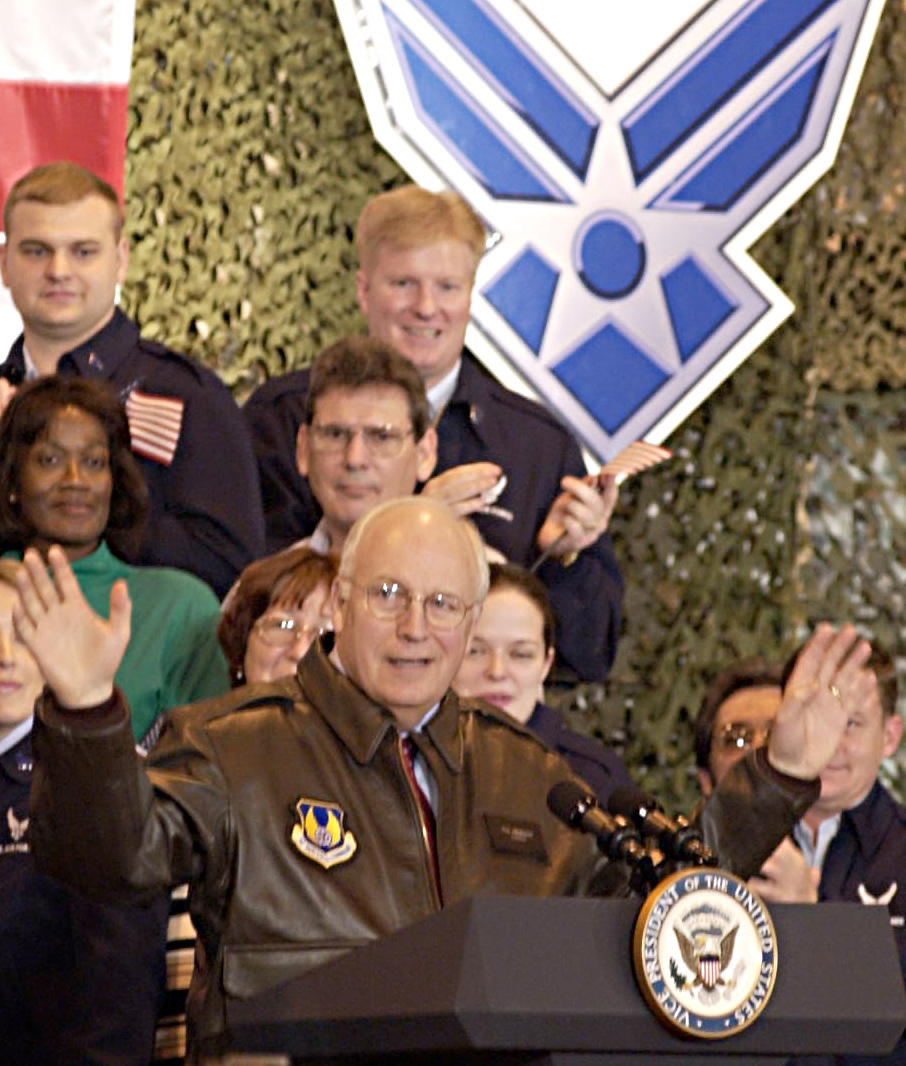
Cheney visits Ohio base

WRIGHT-PATTERSON AIR FORCE BASE, Ohio -- Vice President Dick Cheney gestures March 26 during a speech to servicemembers and Air Force civilians here. The vice president expressed his and the president's appreciation for Air Force people during his brief stop here.